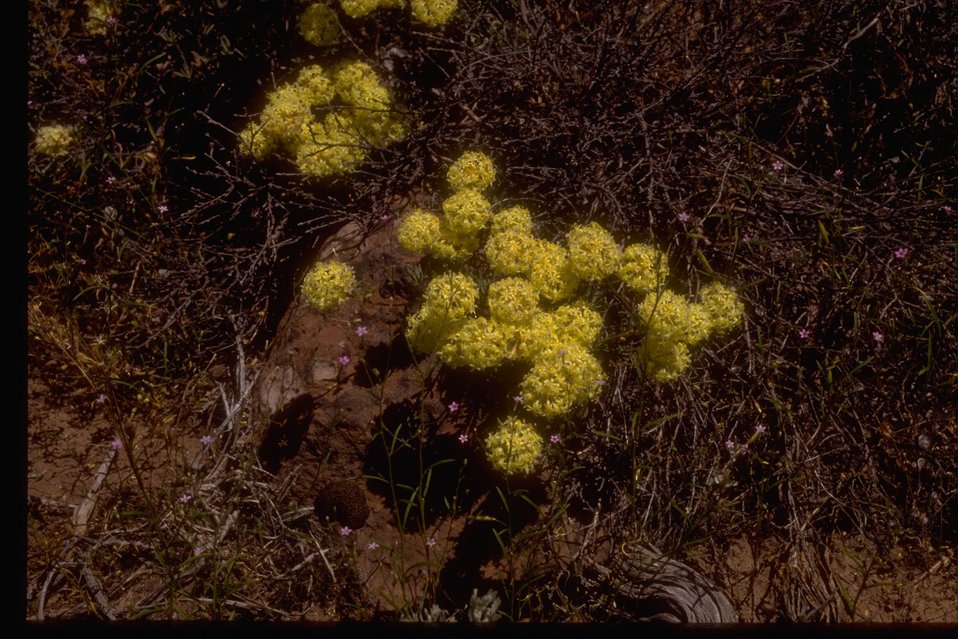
Wildflowers near Steens Mountain.